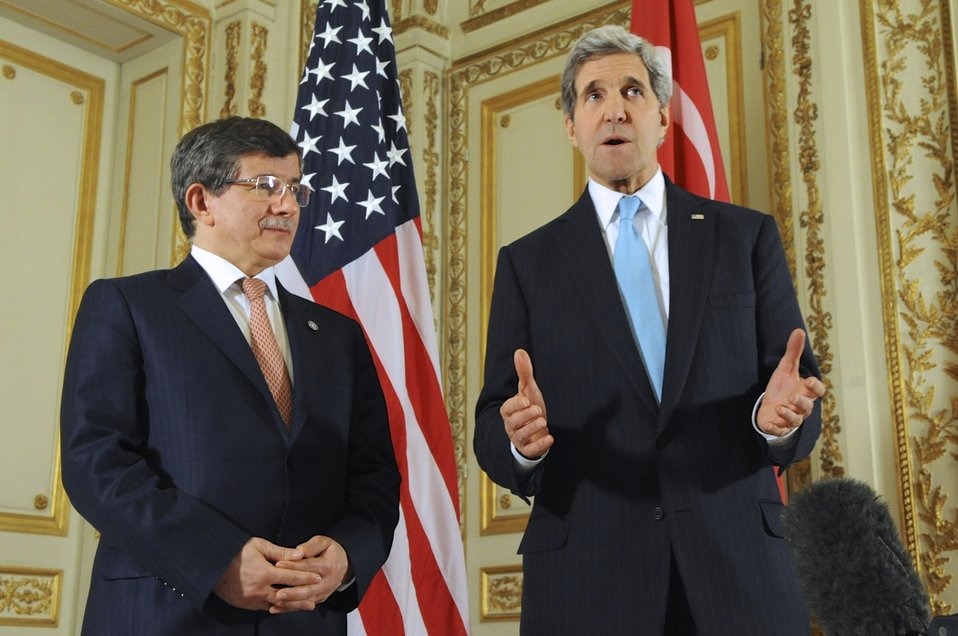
Secretary Kerry Addresses Media After Meeting with Turkish Foreign Minister Davutoglu

U.S. Secretary of State John Kerry, flanked by Turkish Foreign Minister Ahmet Davutoglu, addresses reporters after a bilateral discussion that followed a meeting of the London 11 group in Paris, France, on January 12, 2014.